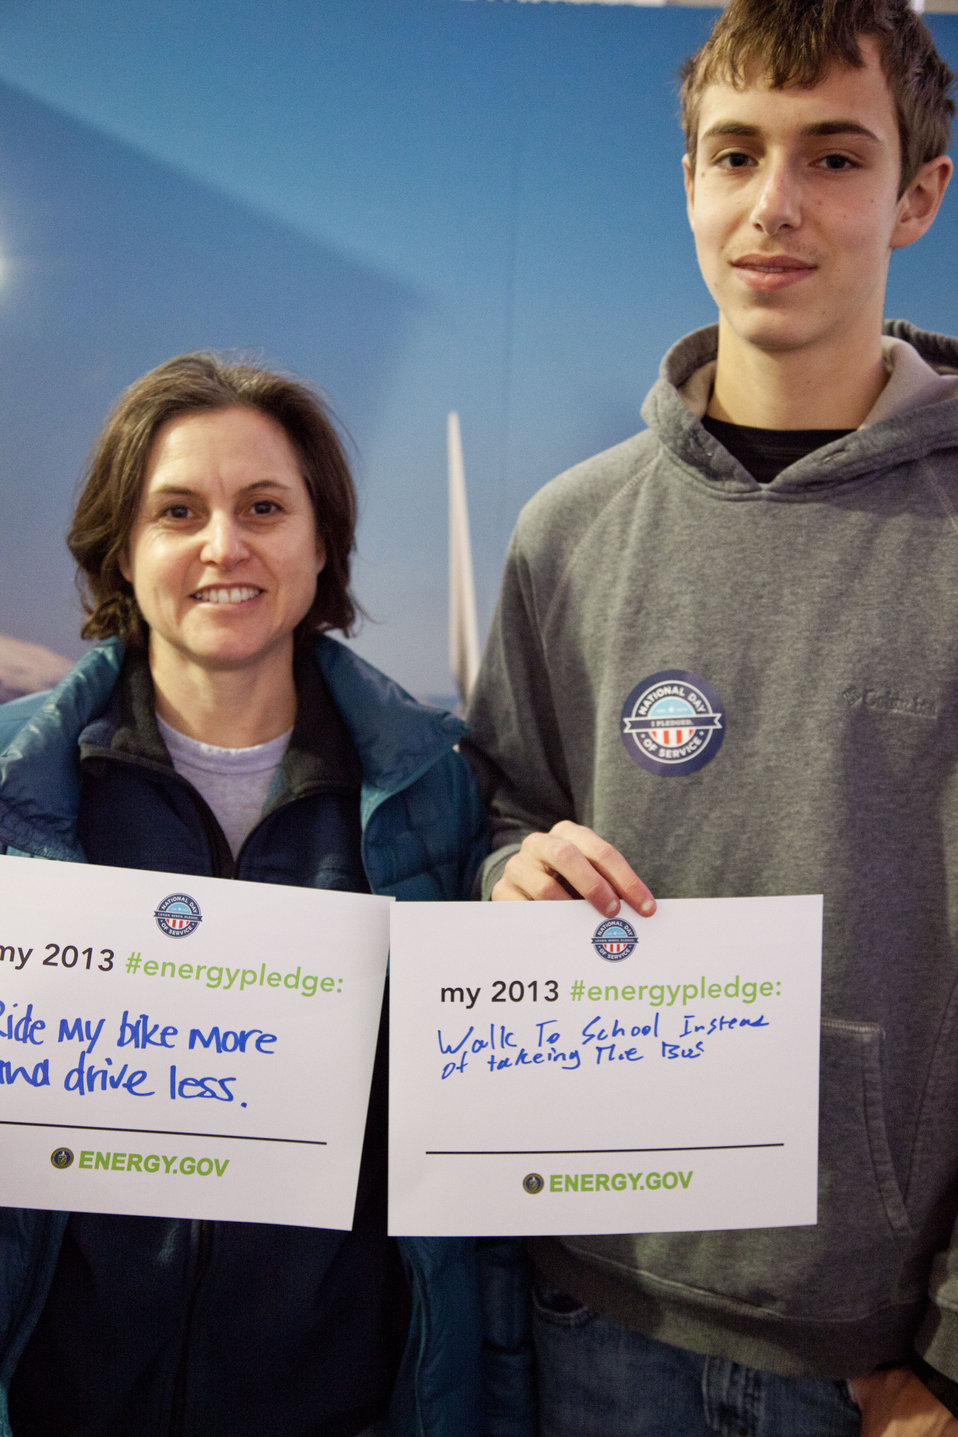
What's your #energypledge?